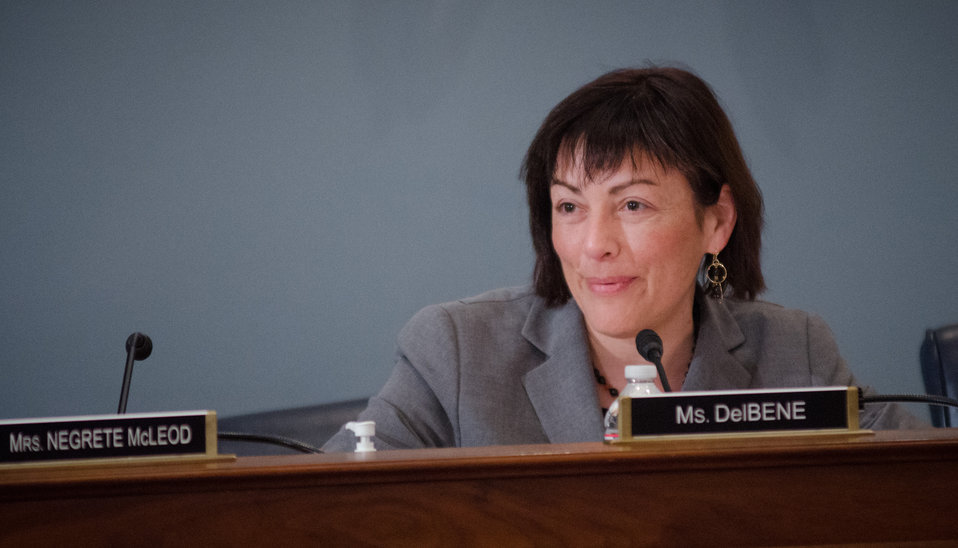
Representative Susan DelBene (WA) questions Agriculture Secretary Tom Vilsack, not seen, during testimony before the House Agriculture Committee regarding the “State of the Rural Economy“ at the Longworth House Office Building in Washington, D.C. on Tuesday, Mar. 5, 2013.